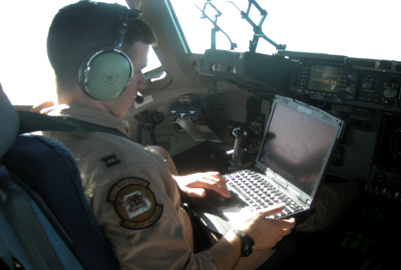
Fuel savings

Capt. James Sprys operates Mission Index Flying software on an Air Mobility Command mission laptop computer. MIF uses airborne solution software in the cockpit, allowing aircrews to fly at optimal altitudes and airspeeds for their current flight conditions, thereby minimizing flight time and fuel burn and reducing operating costs. Captain Sprys is a 6th Airlift Squadron C-17 Globemaster III aircraft commander.